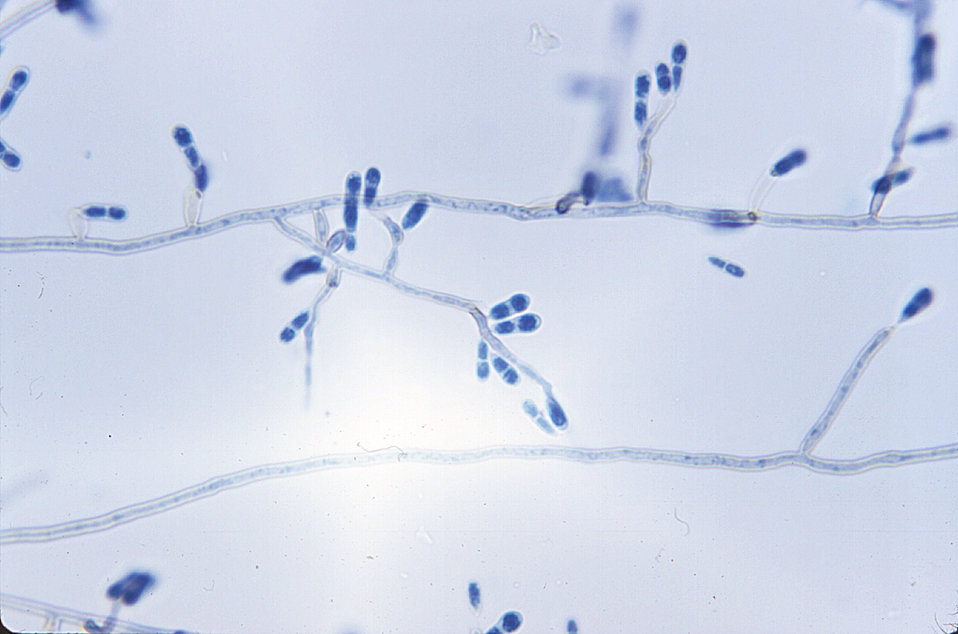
Under a magnification of 500X, this photomicrograph revealed some of the ultrastructural morphology displayed by the fungus formerly known as Dactylaris gallopavum, now known as Ochroconis gallopavum. Note the branching septate hyphae, as well as the conidiophores, which are topped with fungal spores, or conidia, also known as mitospores, for they are born out of the process of mitosis, and are therefore, haploid when they reach maturity.